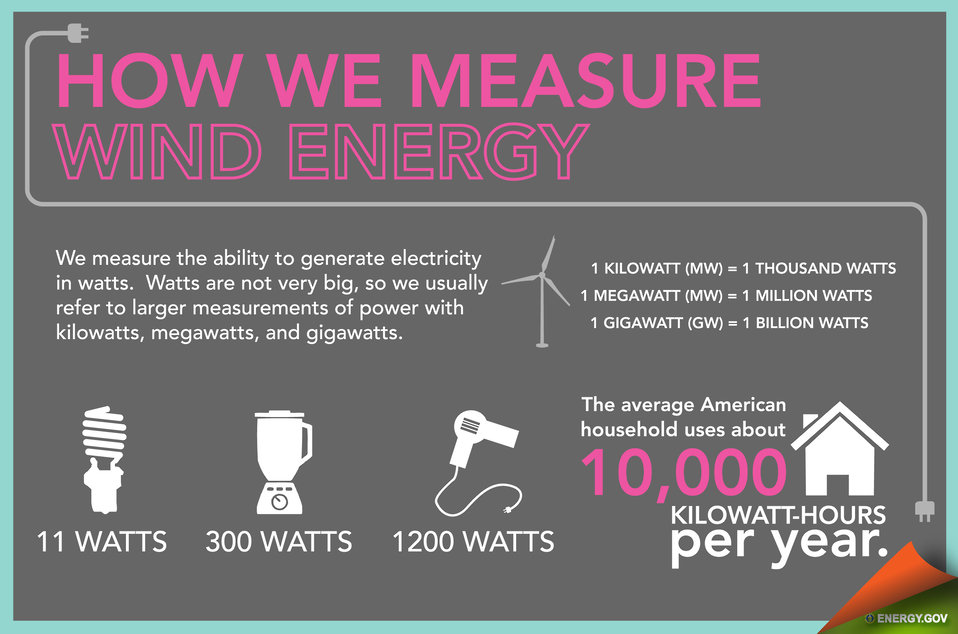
Wind Energy in America - Slide 4